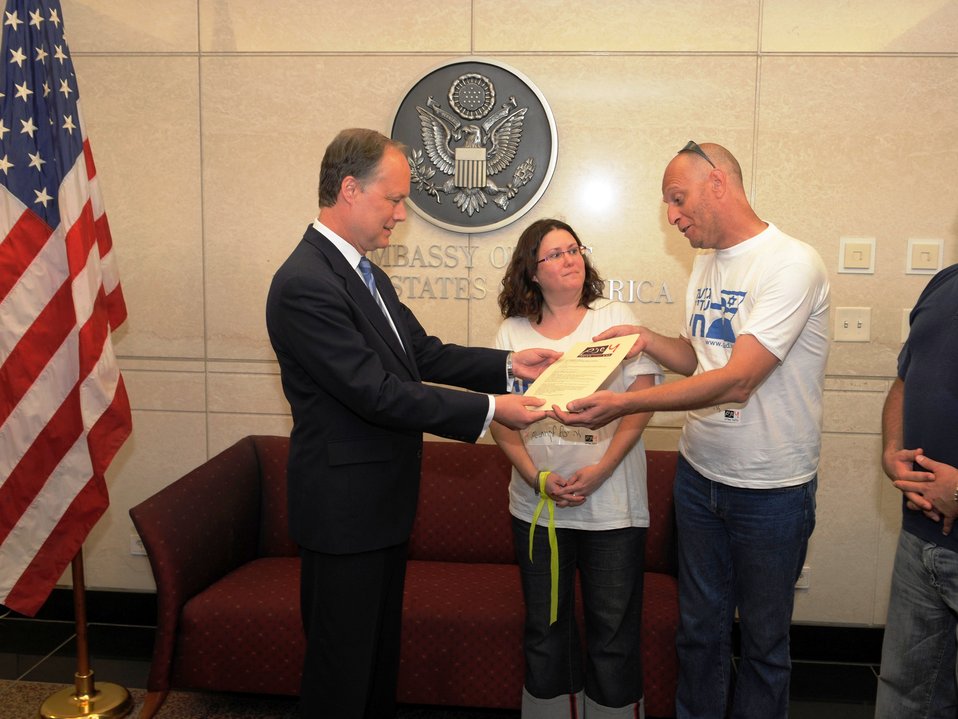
Ambassador Cunningham Receives Letter From Civil Drafting Chamber Representatives for Gilad Shalit

U.S. Ambassador to Israel James Cunningham is given a letter from the representatives for the Civil Drafting Chamber for Gilad Shalit, (left to right) Inbal Braverman and Kobi Neeman, on the fourth anniversary of his capture on June 25, 2010, in Tel Aviv, Israel.